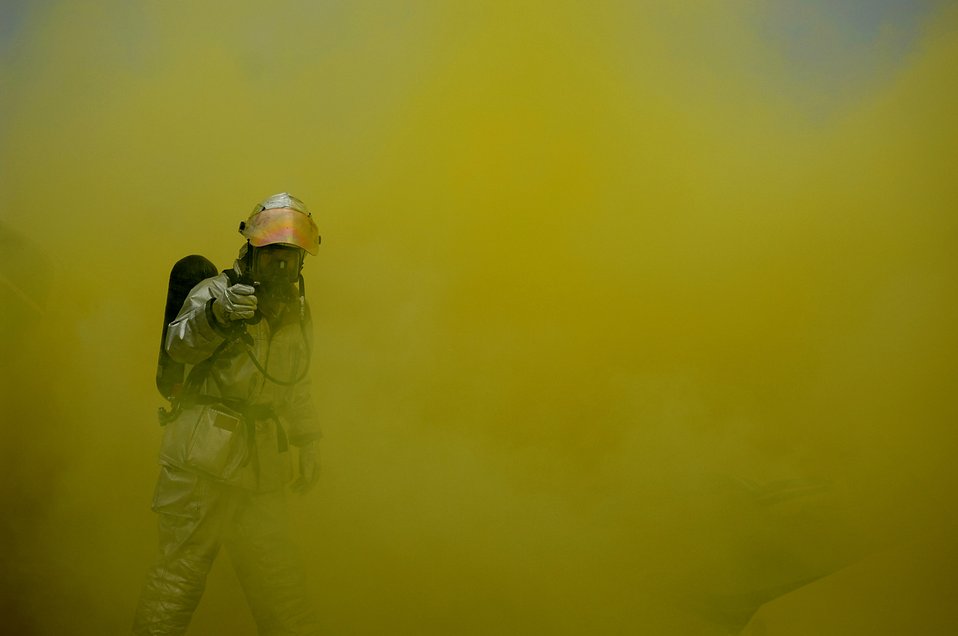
Where's the fire?

An Airman from the Charleston Air Force Base, S.C., fire department walks through smoke that simulates an aircraft crash on the Charleston AFB flightline as part of a routine training exercise.